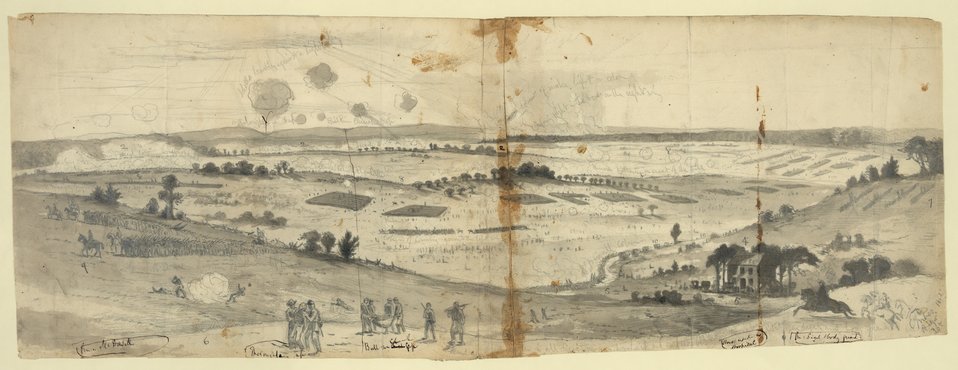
2nd Manassas Battlefield

Drawing from Library of Congress collection. The 2nd Battle of Manassas occurred in 1862, from which the Union retreated to Washington, D.C. and the Capitol became a hospital for causalities.